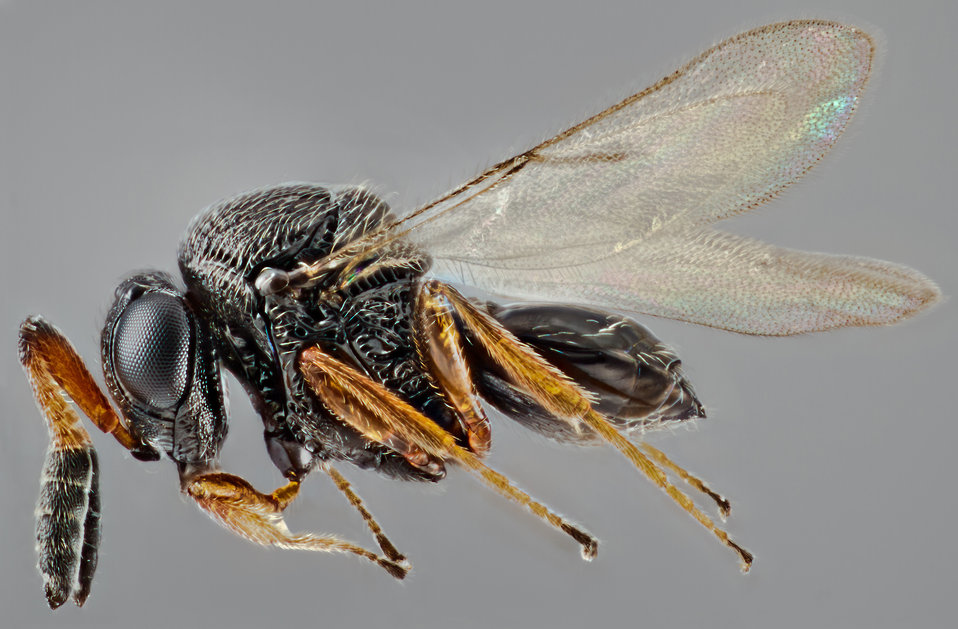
A female parasitoid wasp (Trissolcus mitsukurii) from Asia is one of several parasitoids being evaluated as a potential biocontrol of the brown marmorated stink bug.